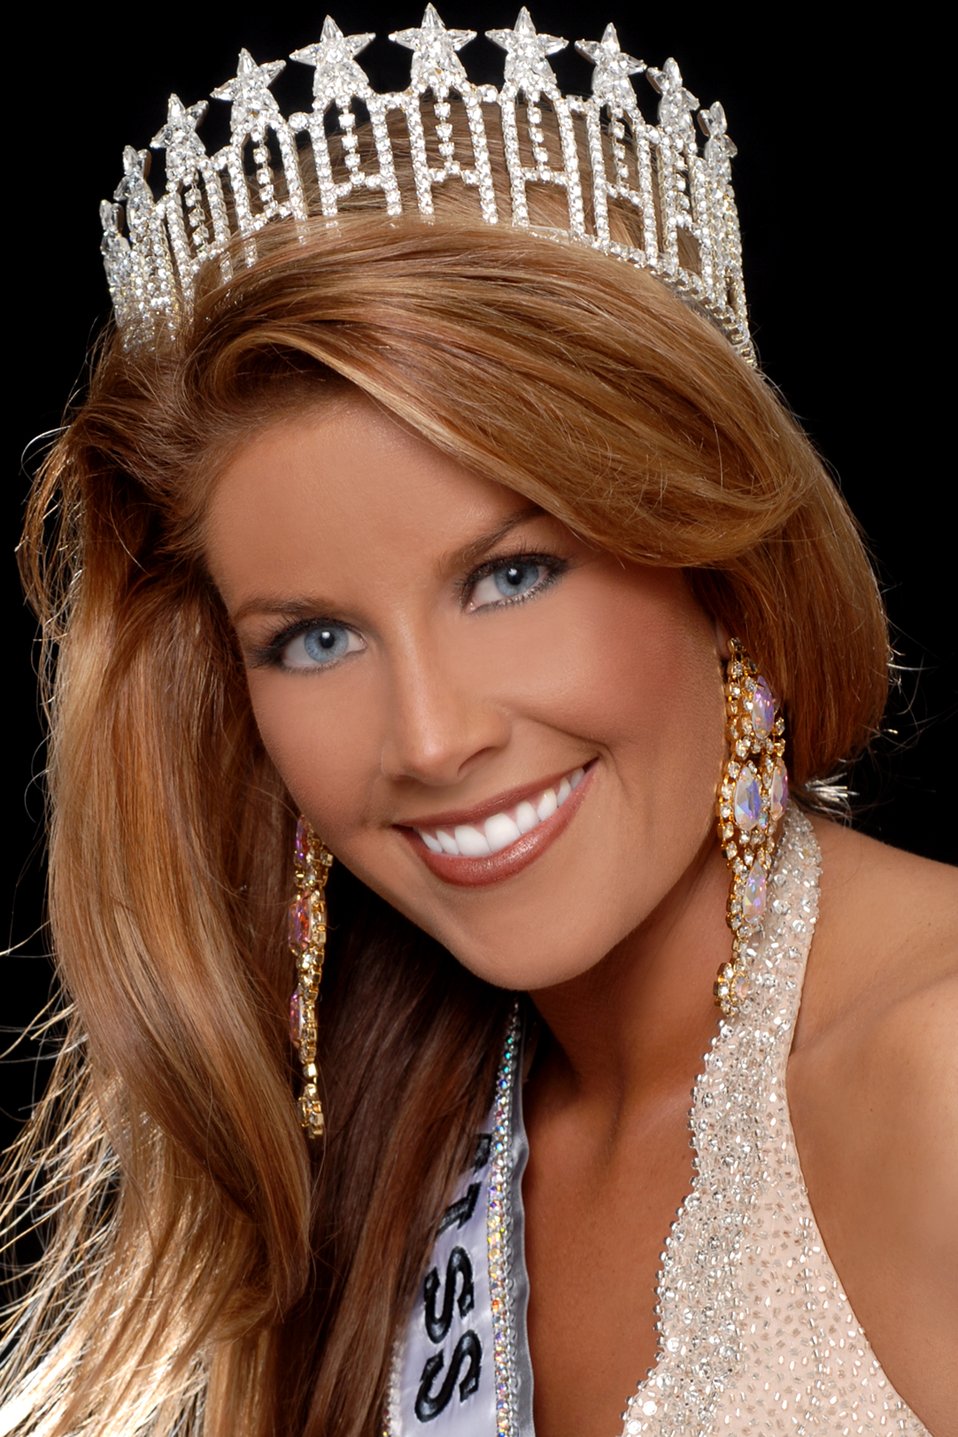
Airman selected as Miss Arkansas USA

Second Lieutenant Kelly George was selected as Miss Arkansas USA during the state pageant Oct. 28 held on the campus of the University of Central Arkansas. Lieutenant George is a resident of Sherwood, Ark., and is the deputy chief of Public Affairs for the 314th Airlift Wing at Little Rock Air Force Base, Ark.